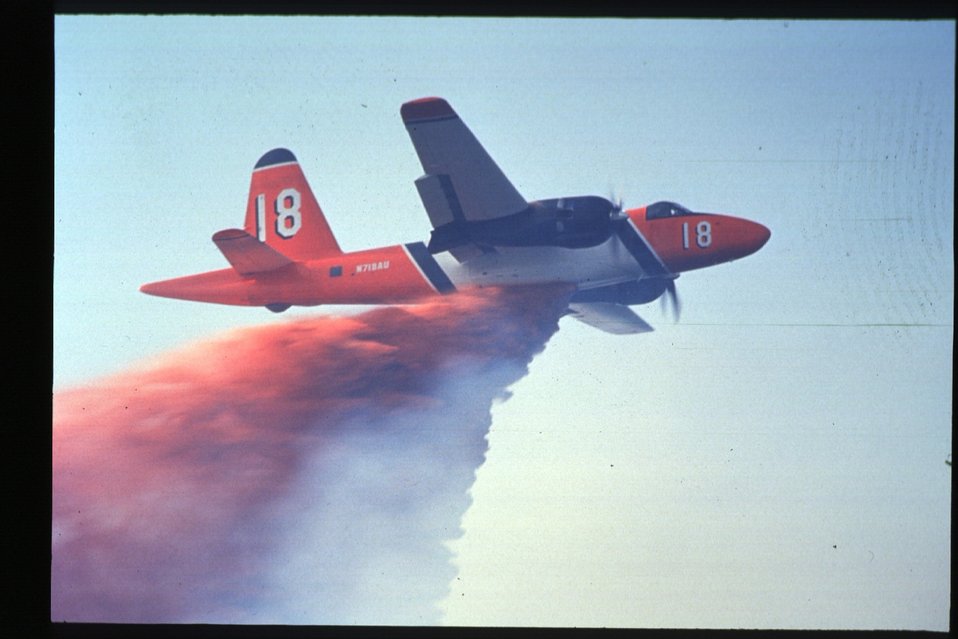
Boise Foothills Fire Danskin Mountains and South Fork of Boise River Retardent plane Four River Field Office LSRD Lower Snake River District